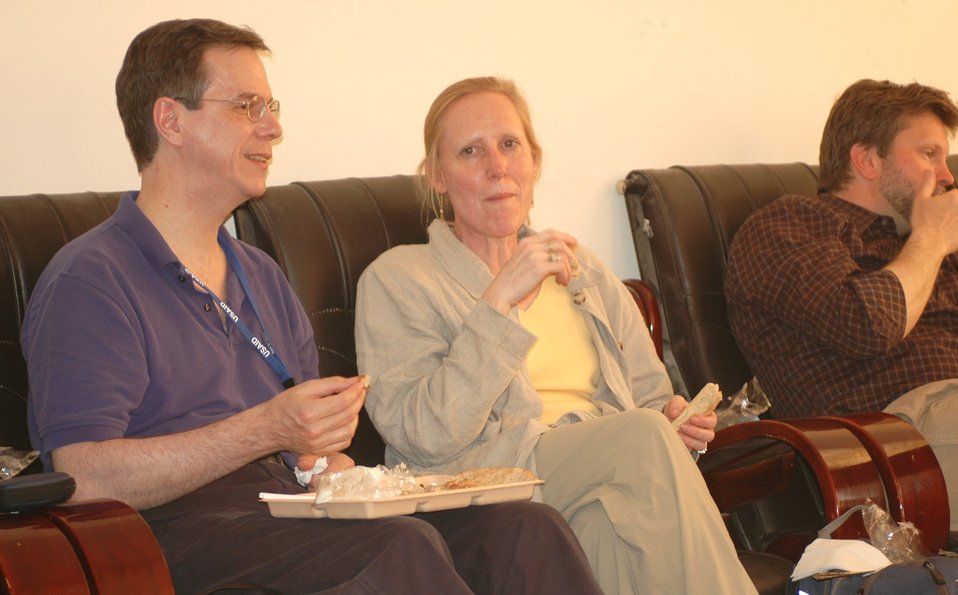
Dr Shah Visits Argandab April 10, 2010